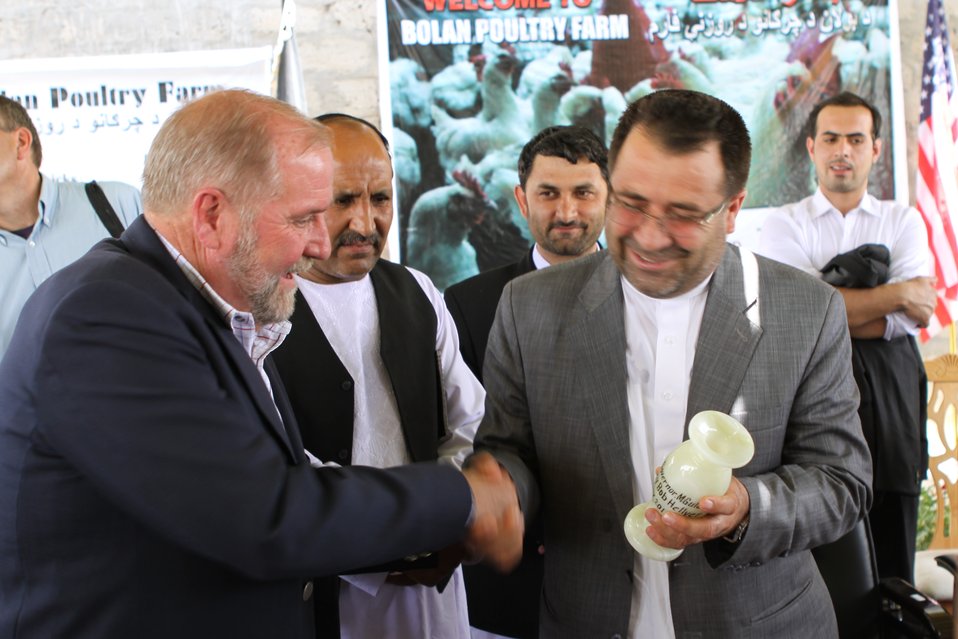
Bolan Poultry Farm